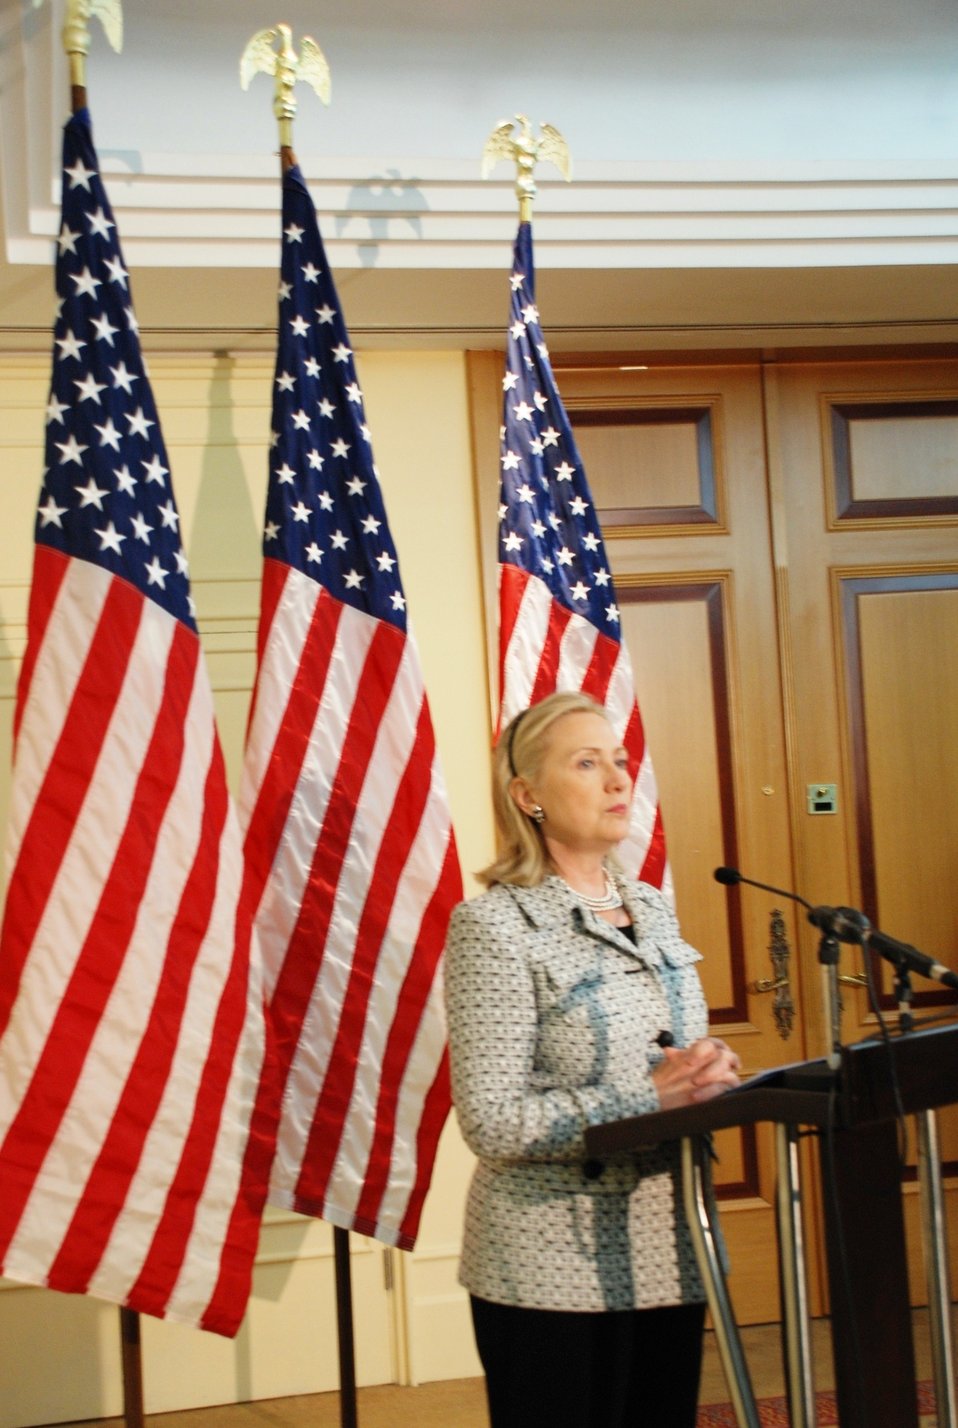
Secretary Clinton Addresses Reporters After Fourth Libya Contact Group Meeting

U.S. Secretary of State Hillary Rodham Clinton addresses reporters after participating in the fourth Libya Contact Group Meeting at the Çırağan Palace in Istanbul, Turkey, on July 15, 2011.